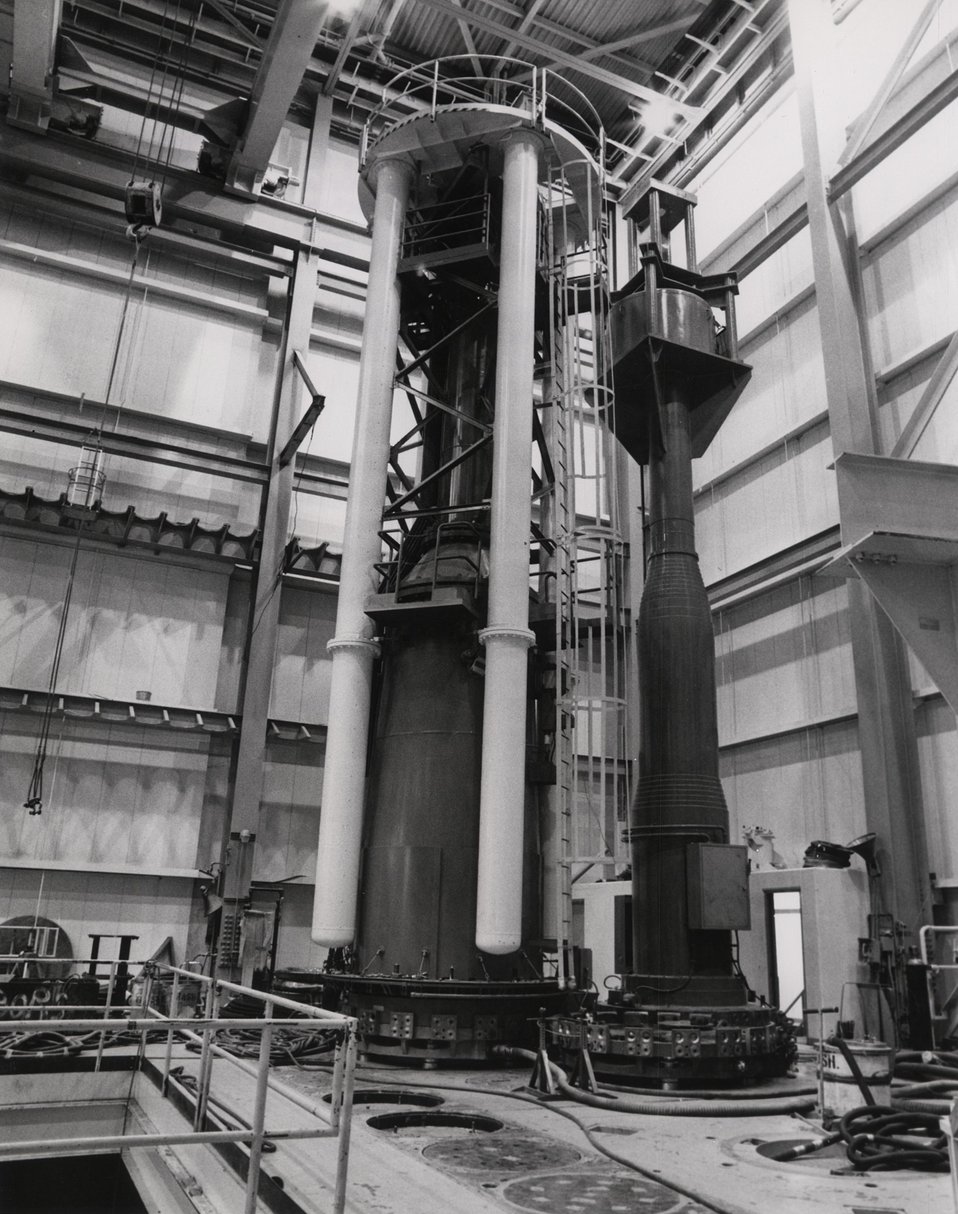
Fuel-handling machine and auxiliary service cask to be used for refueling operations at Public Service Company.